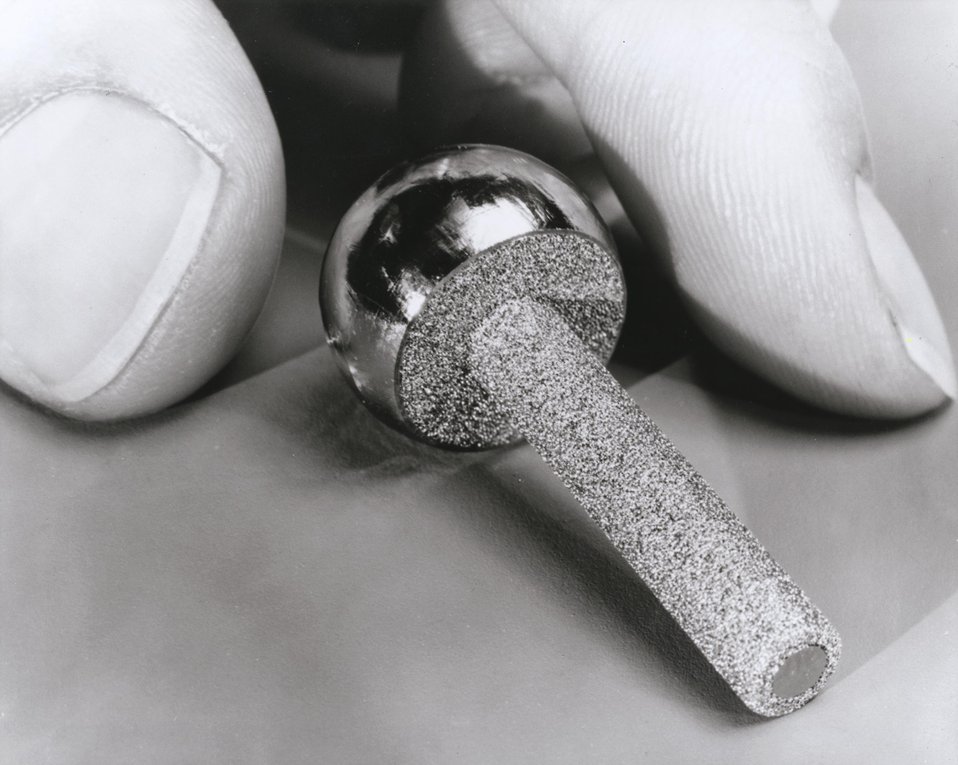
The U.S. Dept. of Energy materials research at Hanford has led to the development of this void metal composite used to anchor artificial implants to living bone. c. 1972